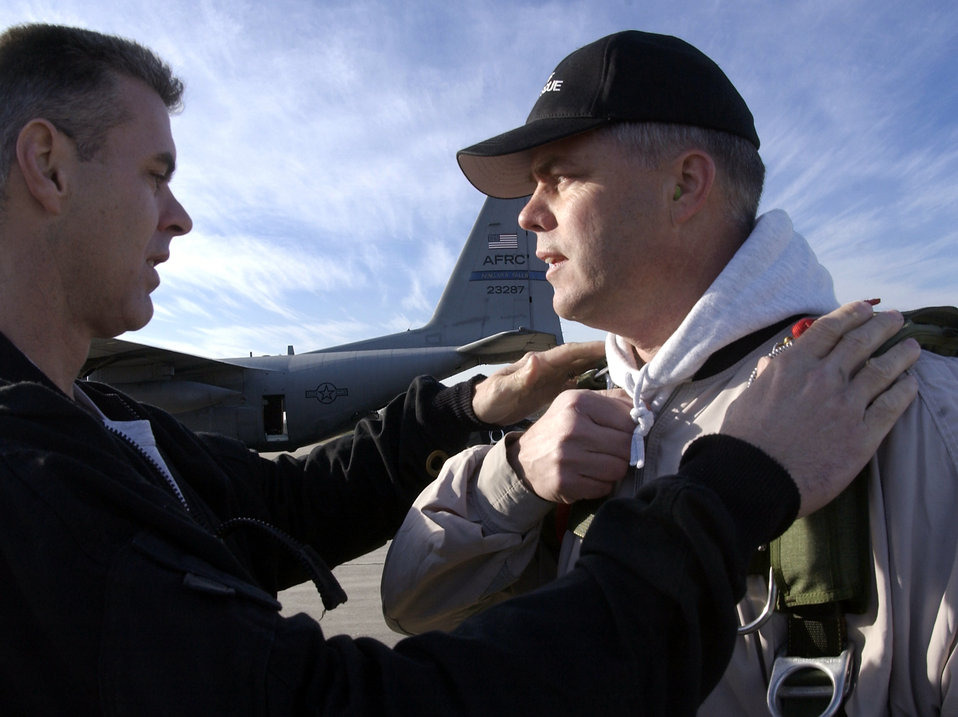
You might as well JUMP!

LACKLAND AIR FORCE BASE, Texas -- Capt. Lamar Eikman (left) performs a jumpmaster inspection on Chief Master Sgt. Edward Lundberg before boarding a C-130 Hercules for a proficiency training exercise. They are preparing for a high-altitude, low-opening parachute jump onto the parade grounds here Feb. 21. Captain Eikman is flight commander of the 342nd Training Squadron's combat training flight here and Chief Lundberg is the pararescue functional manager for Air Education and Training Command at Randolph Air Force Base, Texas.